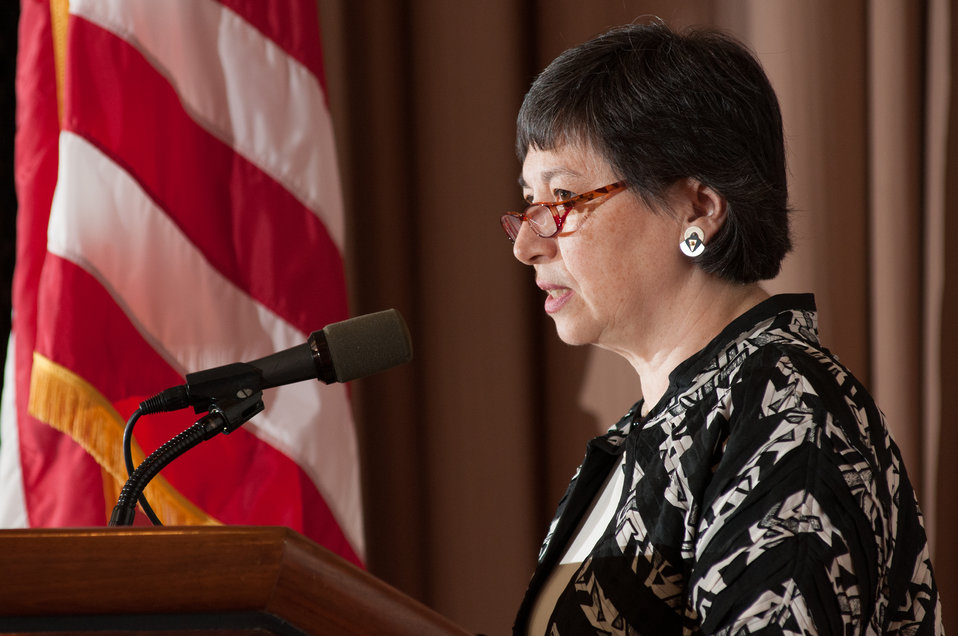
U.S. Department of Agriculture (USDA) Foreign Agricultural Service (FAS) Associate Administrator Janet Nuzum presents a tribute to Senator Daniel Inouye, during the USDA Asian Pacific American Heritage Month Observance, at the USDA headquarters in Washington, D.C., on Thursday, May 23, 2013. This year’s theme is “Building leadership; Embracing the Cultural Values and Inclusions.”